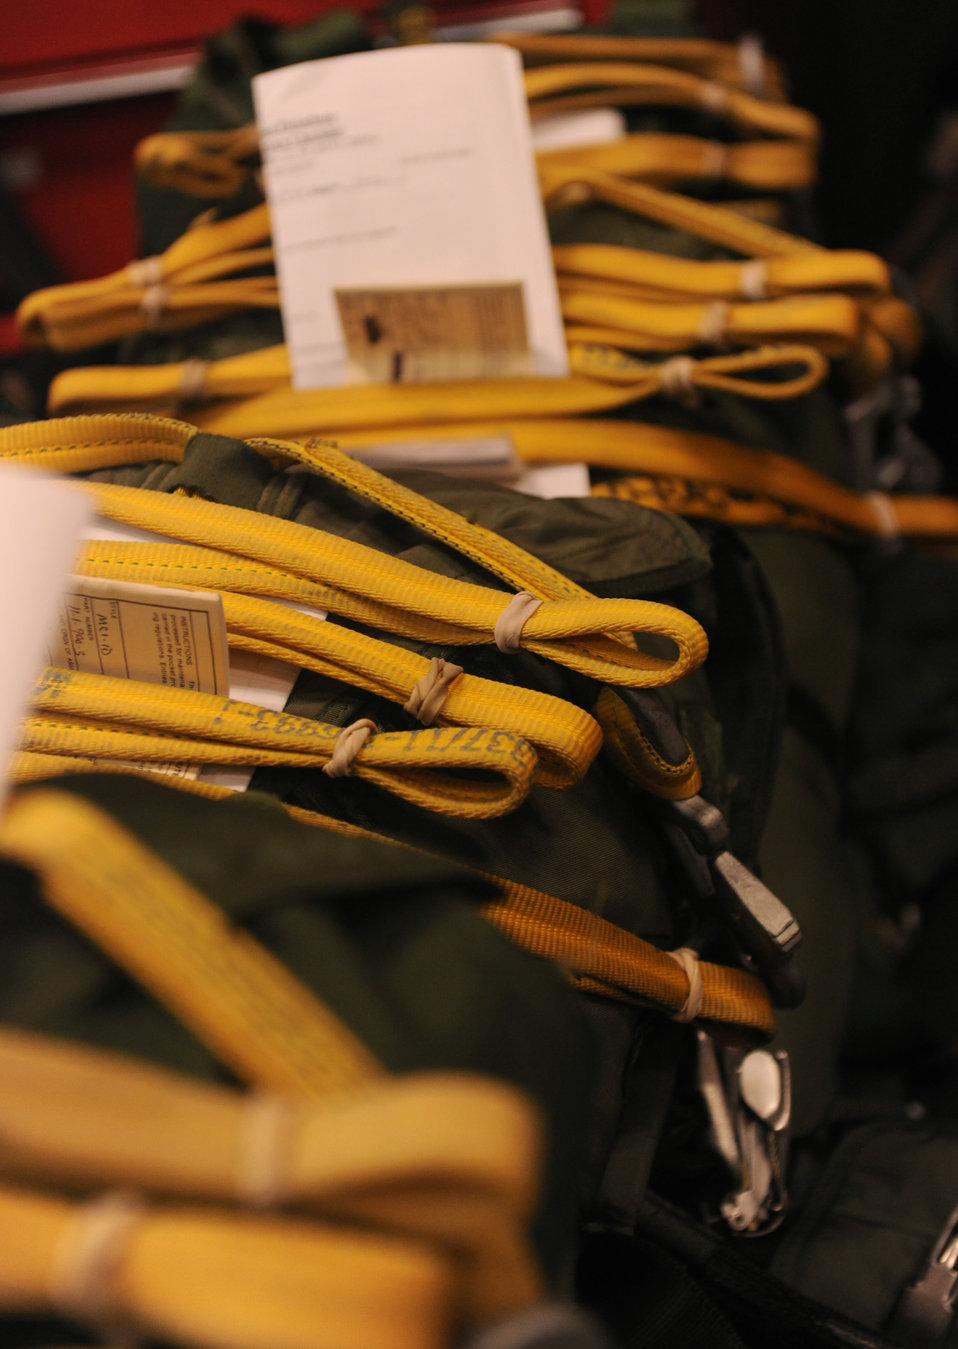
Logistic support

Special operations vector parachutes await inspection by 38th Rescue Squadron logistics flight aircrew flight equipment members May 10, 2010, at Moody Air Force Base, Ga. The AFE section packs and inspects nearly 20 parachutes each day.